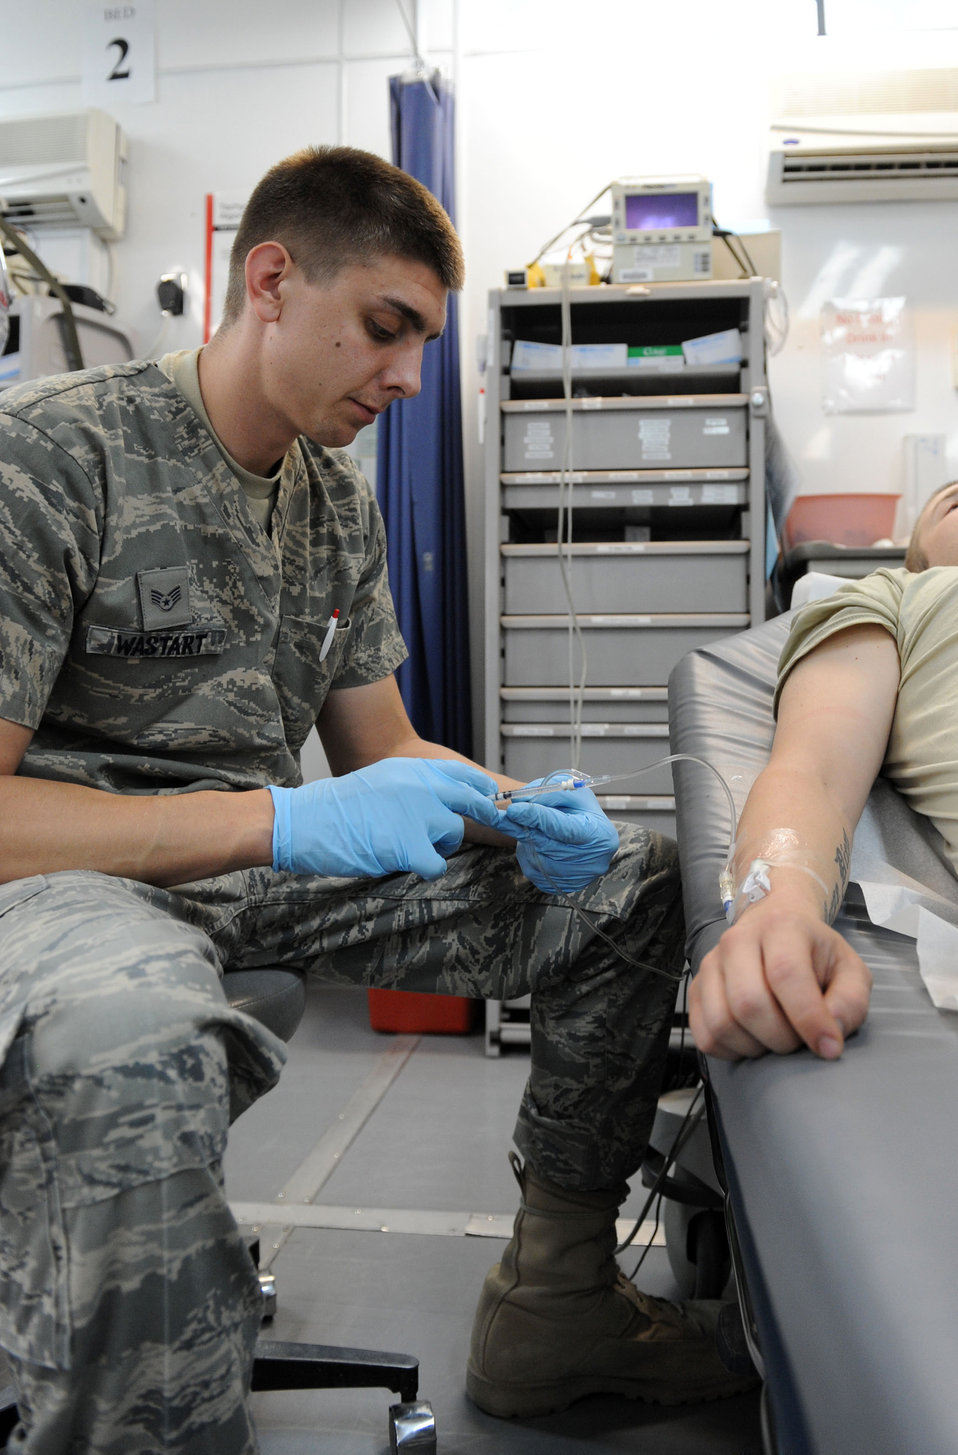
Guardsmen care for wounded warriors

Staff Sgt. Thomas Wastart, 477th Expeditionary Medical Squadron medical technician, administers medication via intravenous line at Sather Air Base June 12. Sergeant Wastart, a native of Stevens Point, Wis., is deployed from the 115th Fighter Wing, Wis.